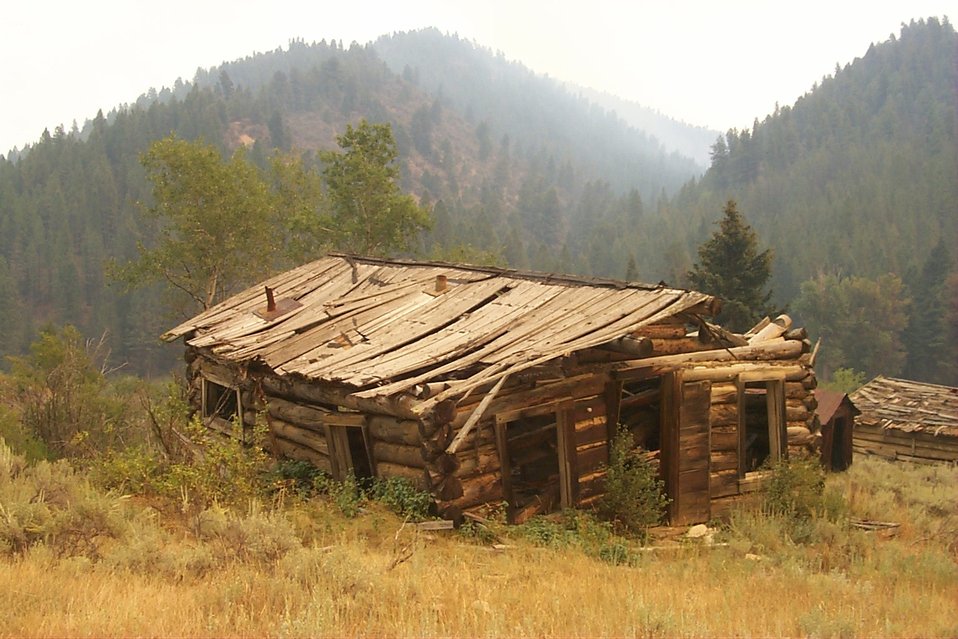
Urban interface Fire Clearwater Fire Salmon Field Office USRD Upper Snake River District